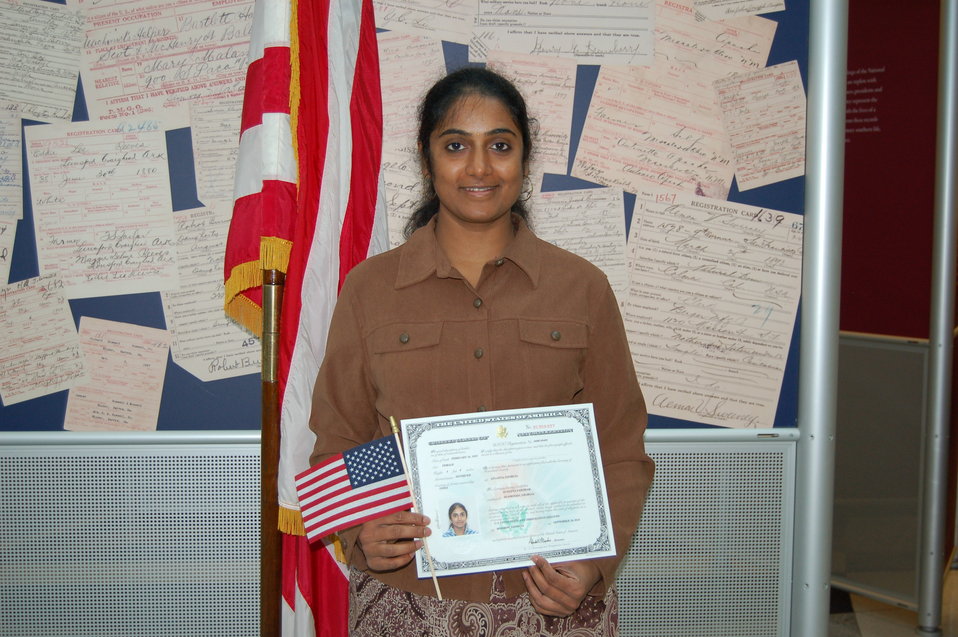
New Citizens